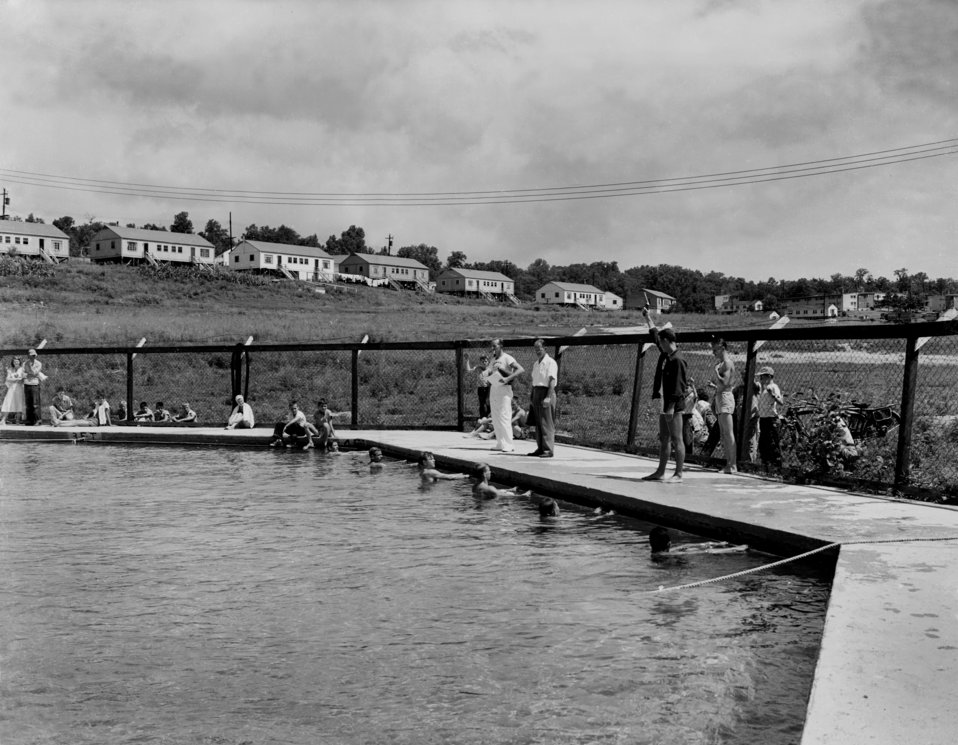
Swimmers in back stroke start position at Oak Ridge

005138-7v DOE photo by Lillian Stokes Swimmers in back stroke start position at Oak Ridge Pool Oak Ridge Tennessee 8/5/1948